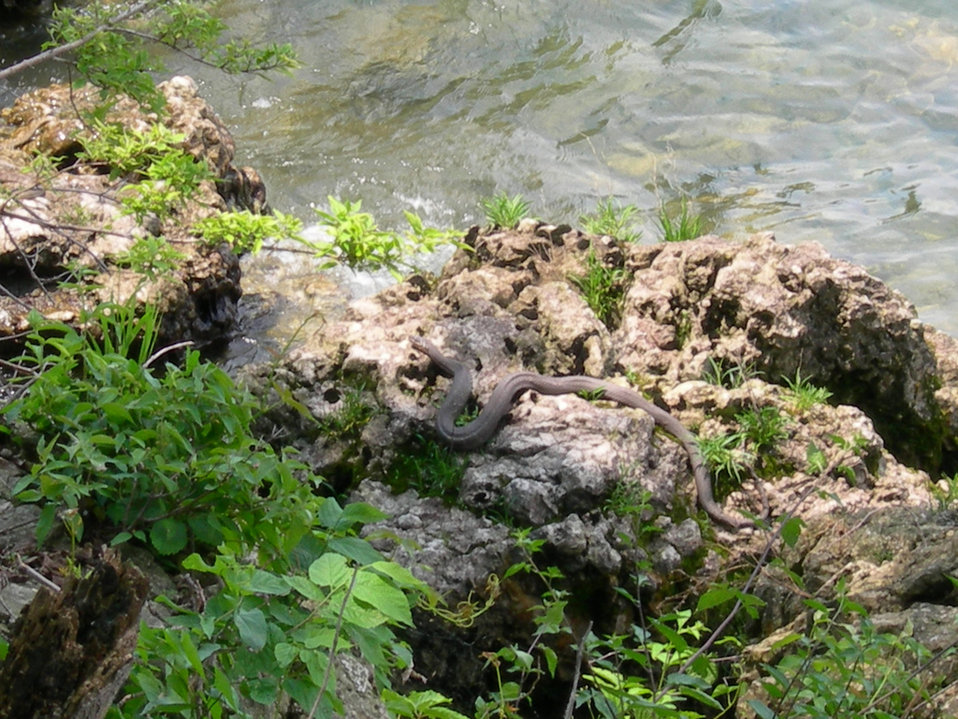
Recovered Lake Erie watersnake (Nerodia sipedon insularum)